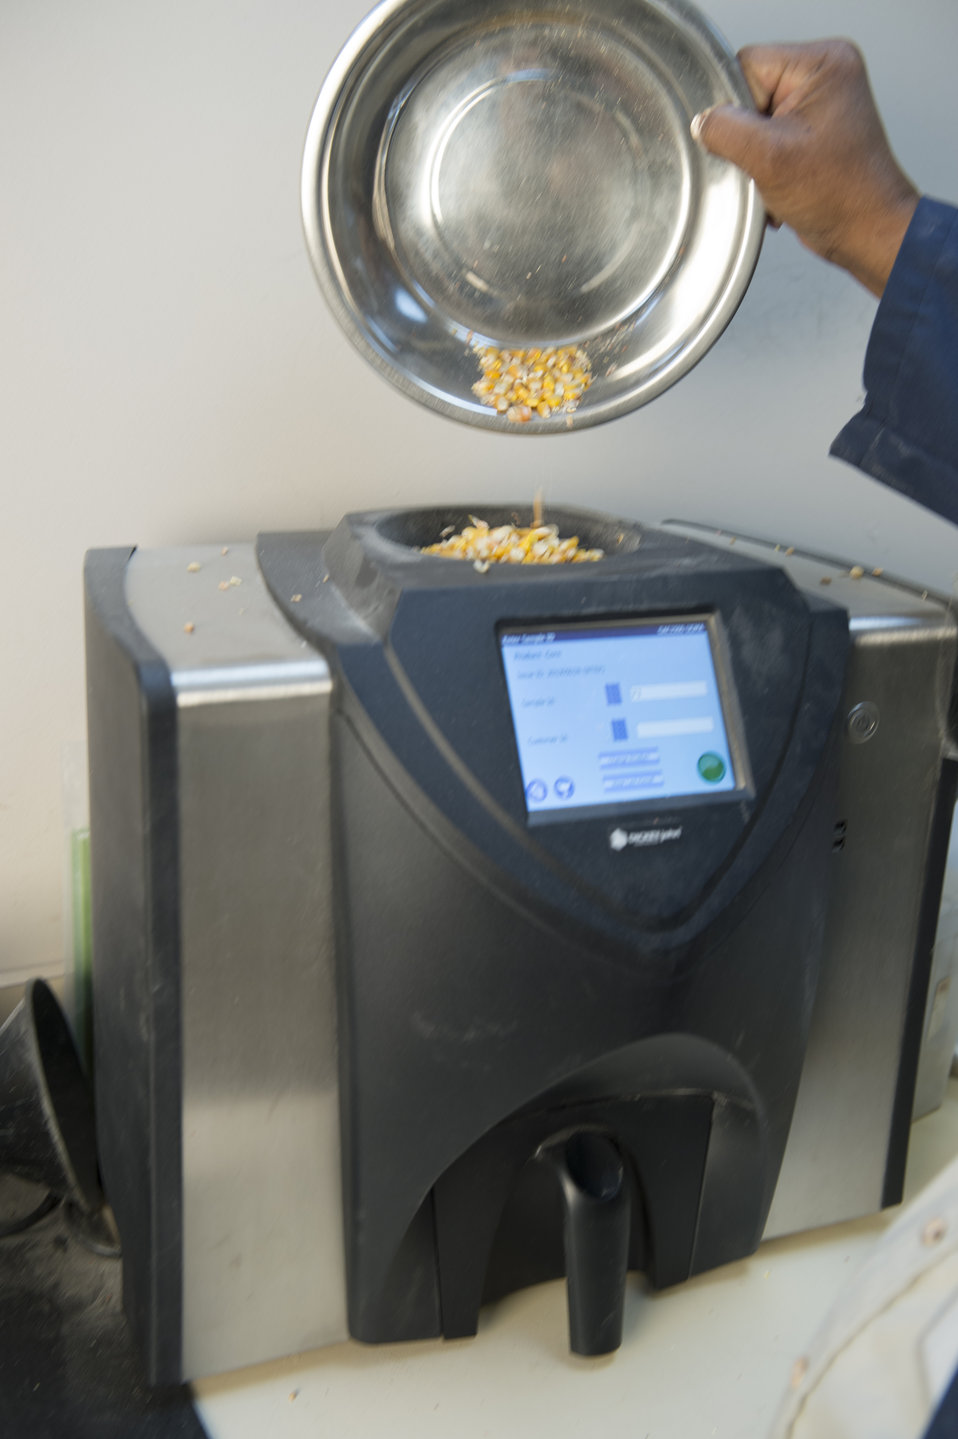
A U.S. Department of Agriculture (USDA) Grain Inspection, Packers and Stockyards Administration (GIPSA) Federal Grain Inspection Service (FGIS) scientist tests corn at the FGIS inspection laboratory in New Orleans, LA on Monday, Nov. 18, 2013.